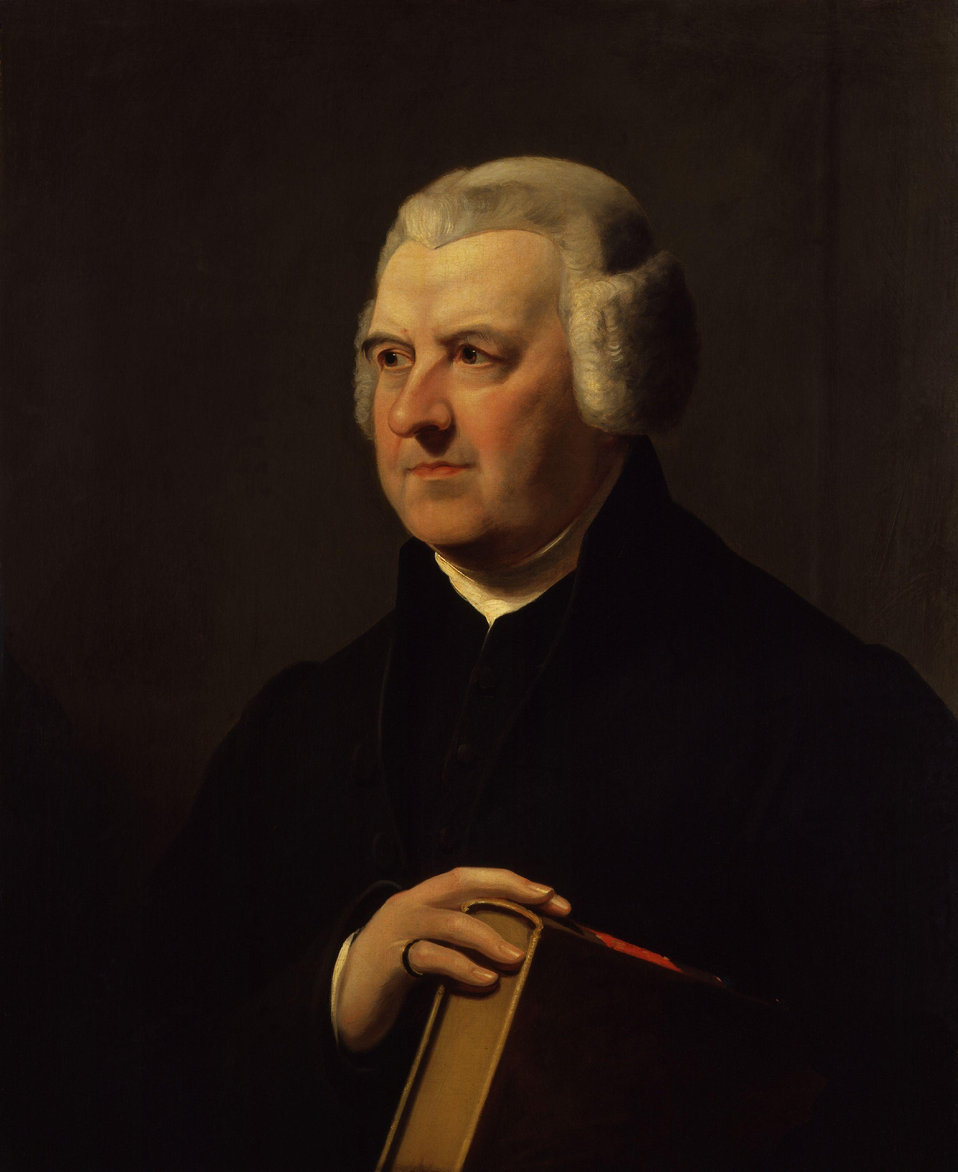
Abraham Rees (1743 – 9 June 1825), compiler of Rees's Cyclopaedia, by James Lonsdale (died 1839). See source website for additional information. This set of images was gathered by User:Dcoetzee from the National Portrait Gallery, London website using a special tool. All images in this batch have been confirmed as author died before 1939 according to the official death date listed by the NPG.